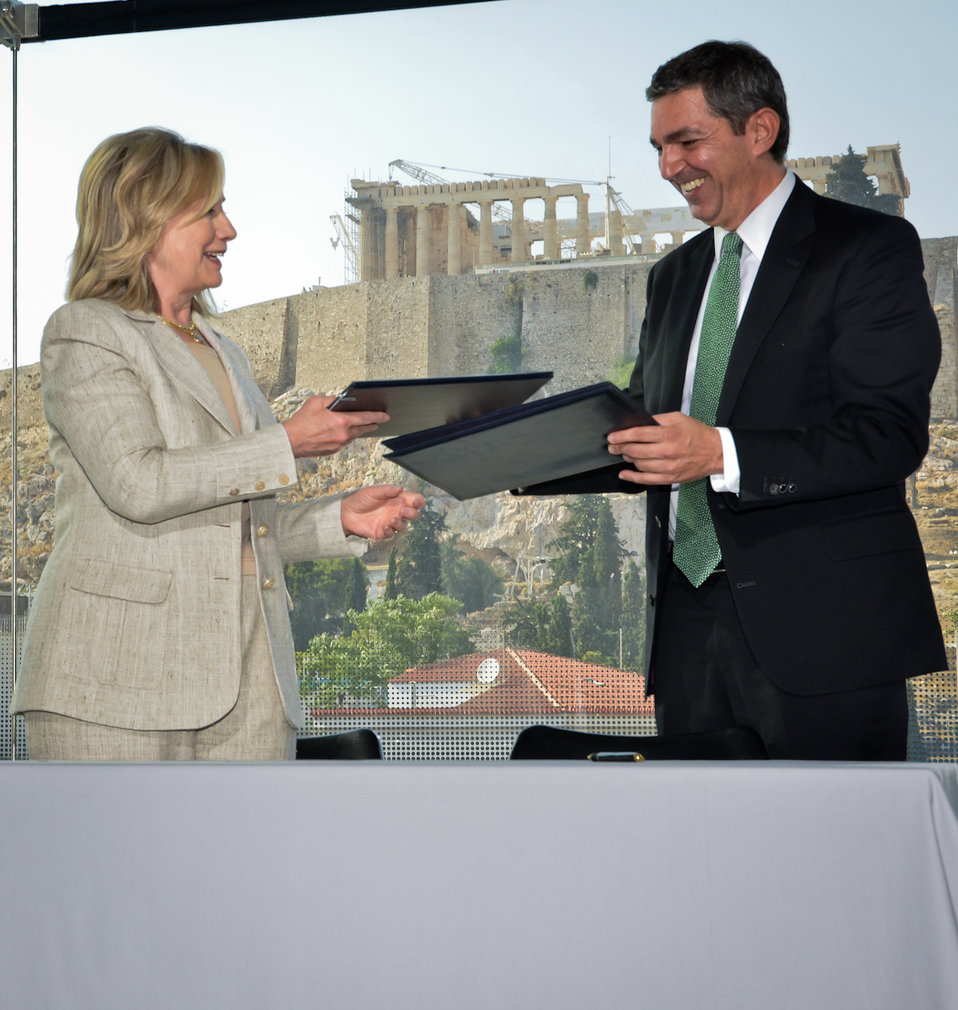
Secretary Clinton and Greek Foreign Minister Lambrinidis Sign an Agreement To Protect Greek Cultural Heritage

U.S. Secretary of State Hillary Rodham Clinton and Greek Foreign Minister Stavros Lambrinidis smile after signing a Memorandum of Understanding between the Government of the United States of America and the Government of the Hellenic Republic to reduce the incentive for further pillage of Greece's cultural heritage at the Acropolis Museum in Athens, Greece, on July 17, 2011.